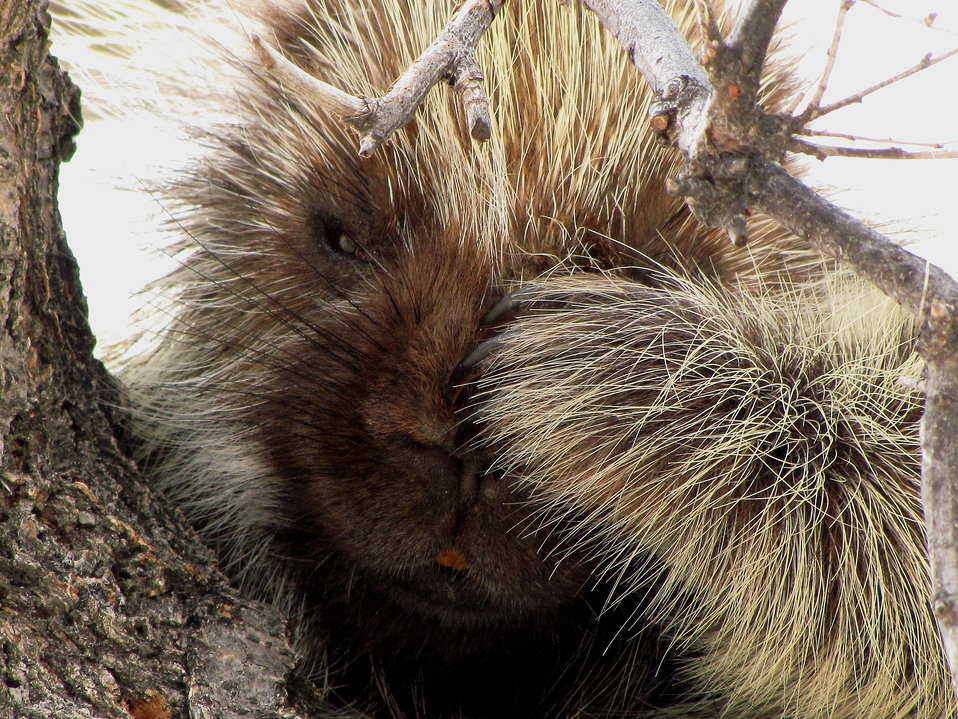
Awakened from Slumber

This porcupine was taking a nap until a USFWS biologist with a camera showed up.

Photo taken in the Kansas Partners for Fish and Wildlife Southwest Prairie Focus Area.

Credit: Tony Ifland / USFWS

Photo Contest Entry #77